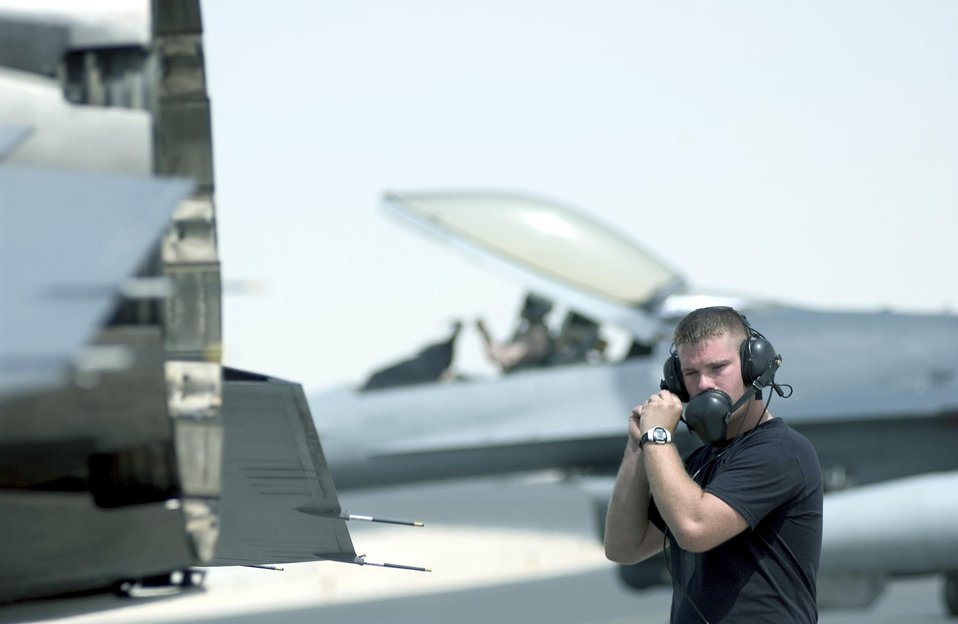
Before 'Falcons' fly

SOUTHWEST ASIA -- Airman 1st Class Davy Ferguson connects his headset to a direct communication line with an F-16 Fighting Falcon pilot. He was preparing to launch the aircraft on an Operation Iraqi Freedom mission from a forward-deployed location. Airman Ferguson is a crew chief assigned to the 555th Fighter Squadron at Aviano Air Base, Italy.